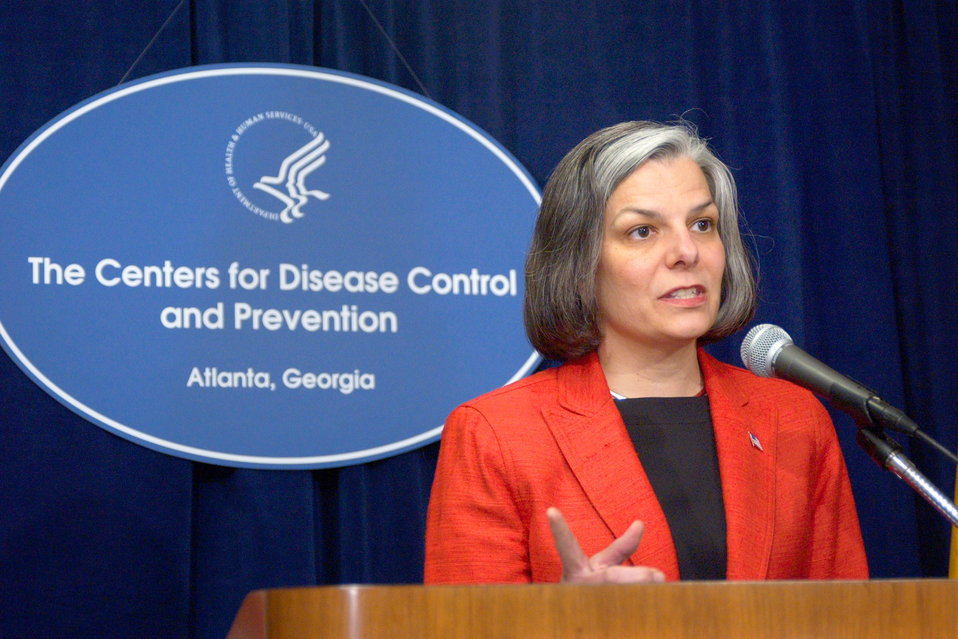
Dr. Julie Gerberding answers questions at a press conference held at CDC in April of 2003.